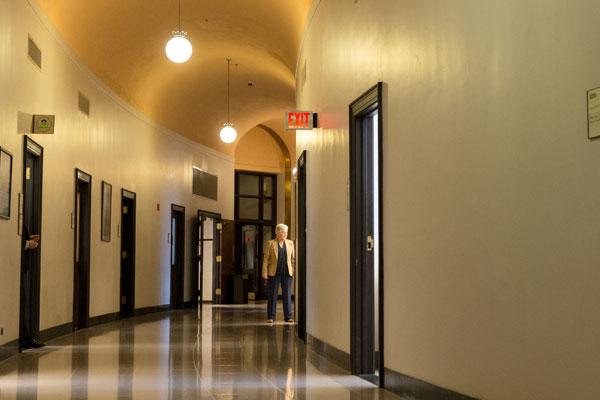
Day in the Life - April 4, 2014

2:26 pm - McCarthy is known to stroll the halls of EPA during the day and drop in on staff to discuss various policy matters and connect with employees throughout the building. (11/12)